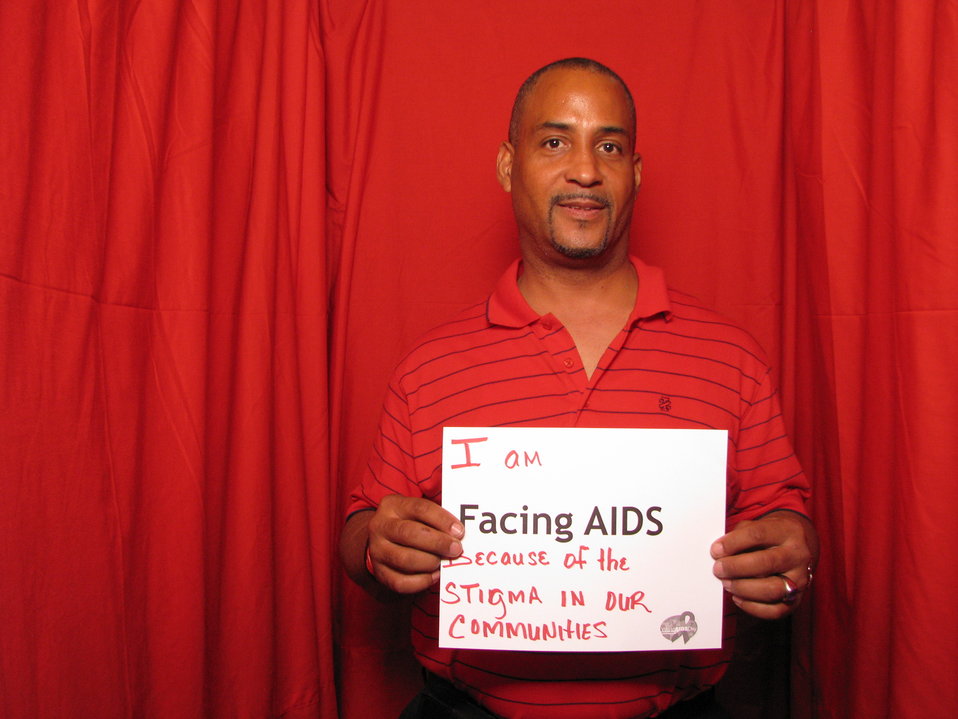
I am FACING AIDS because of the stigma in our communities.

From the AIDS.gov photo booth at the U.S. Conference on AIDS, September 2010 (Orlando, FL).